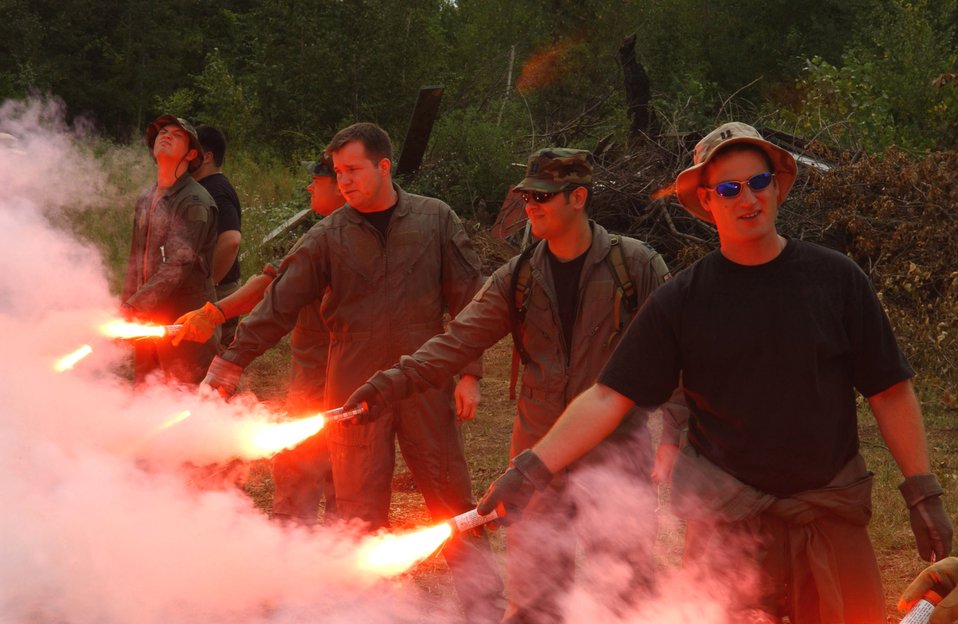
Flares

ST. CROIX, Minn. -- Minnesota Air National Guardsmen ignite MK-13 flares as part of survival training at the Disabled Veterans Rest Camp on Aug. 8. The guardsman are assigned to the 133rd Airlift Wing.